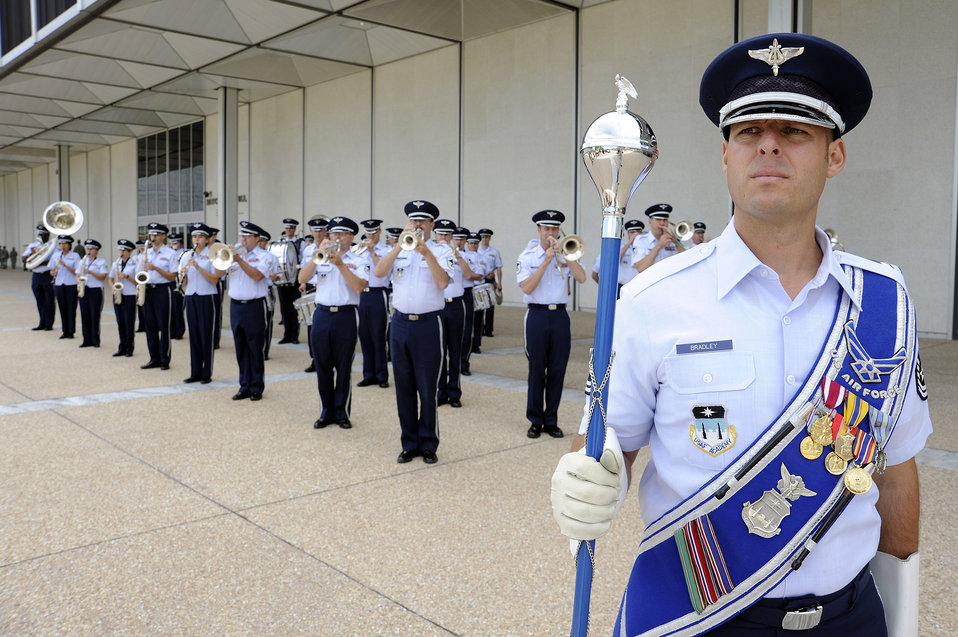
Academy faculty, cadets honor Air Force's 62nd birthday

Master Sgt. Karl Bradley leads the Air Force Academy Band during a parade in honor of the Air Force's 62nd birthday at the U.S. Air Force Academy in Colorado Springs, Colo., Sept. 18, 2009.